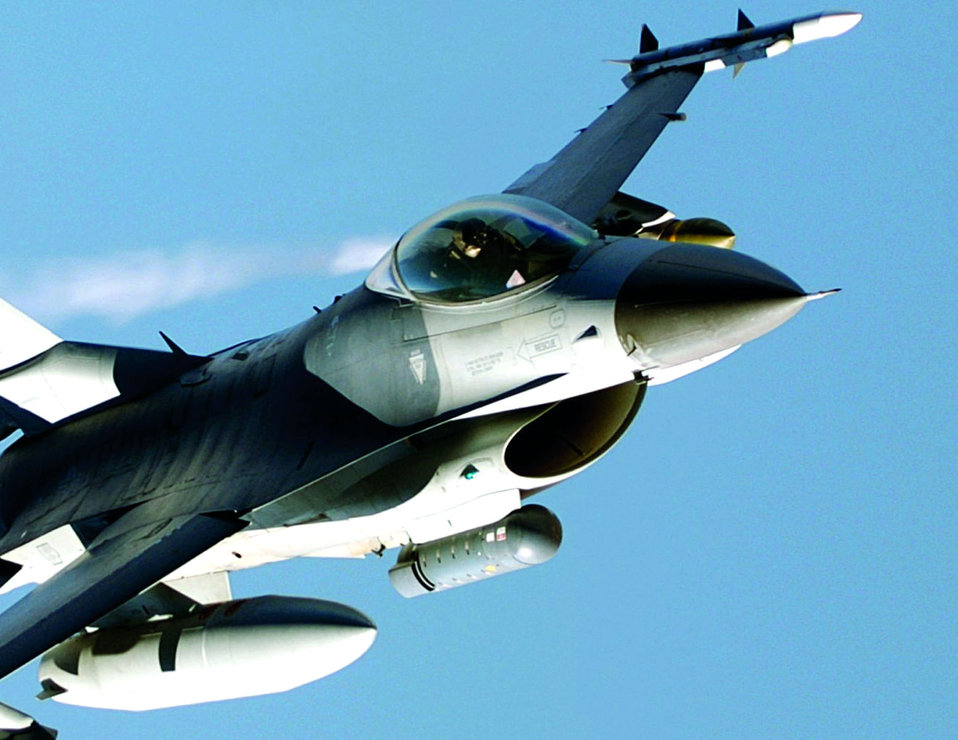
Team tests pod at 'LITENING' speed

A LITENING pod, like the grey cylinder attached to the bottom of this F-16 Fighting Falcon's fuselage, is an operational precision targeting pod system used with a wide variety of combat aircraft. The 416th Flight Test Squadron at Edwards Air Force Base, Calif., recently started accelerated testing of a LITENING-AT targeting pod, which will update the existing LITENING pod with several new capabilities, including a video downlink transmitter currently used in the Predator Unmanned Aerial Vehicle.